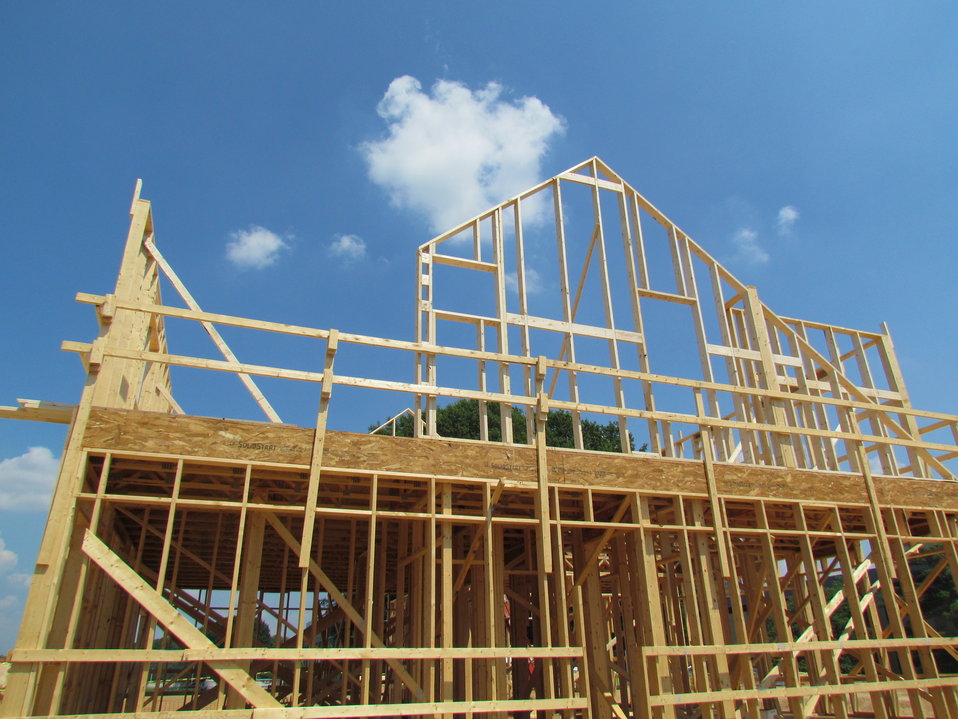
Net-Zero Energy Residential Test Facility - Progress picture showing second floor framing.